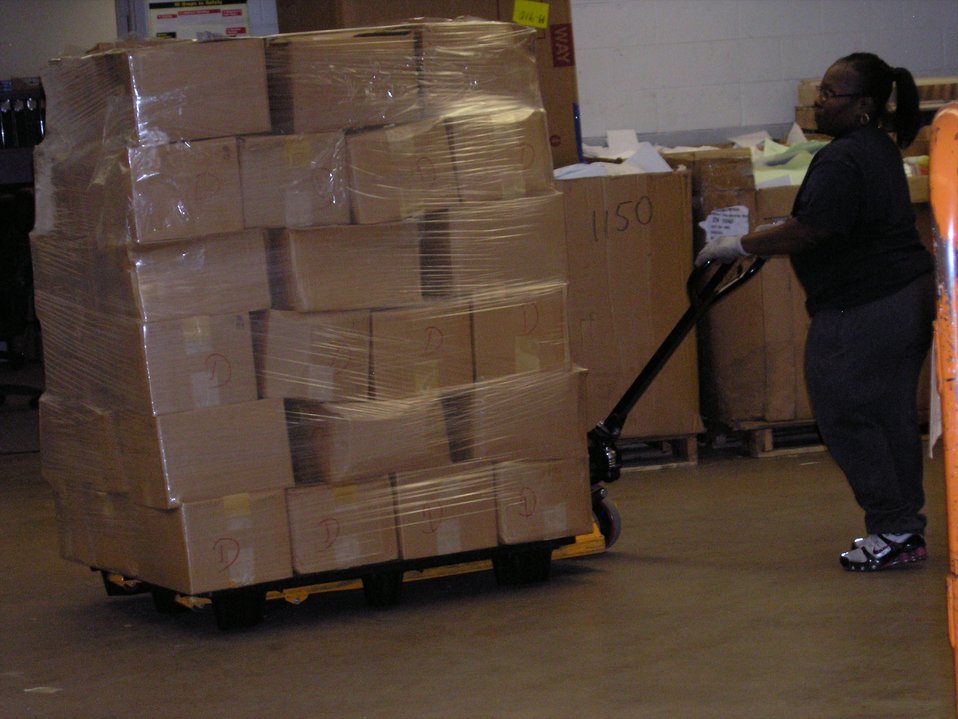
Sunarra Davis using a hand jack to get disposal into position; Location: Chicago Federal Records Center, Chicago, IL